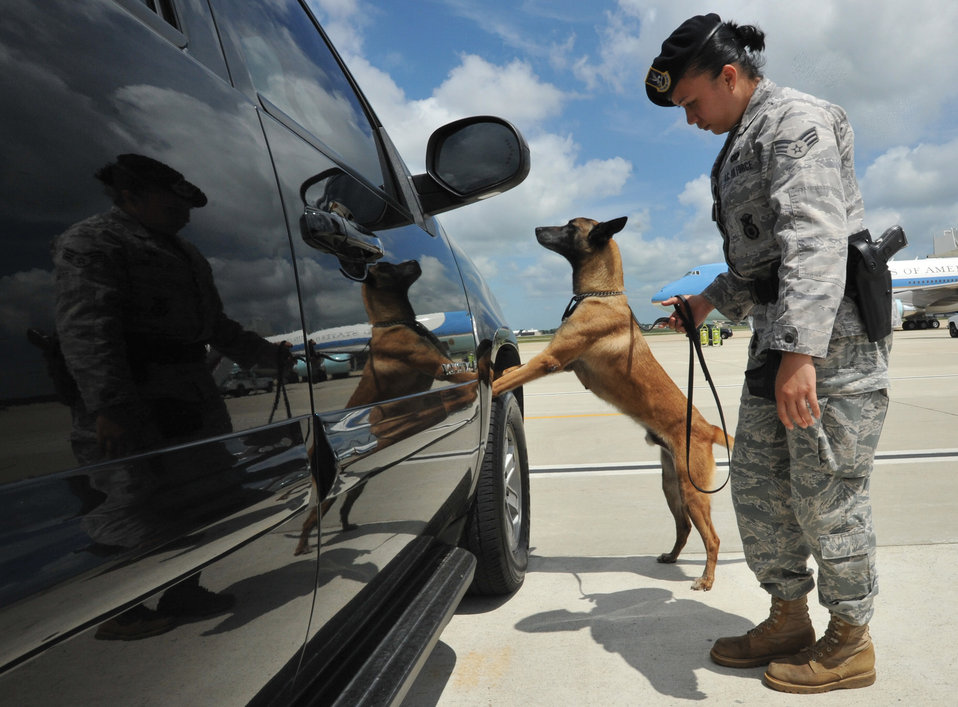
I have to test this tire

Senior Airman Salema Panama and her military working dog partner